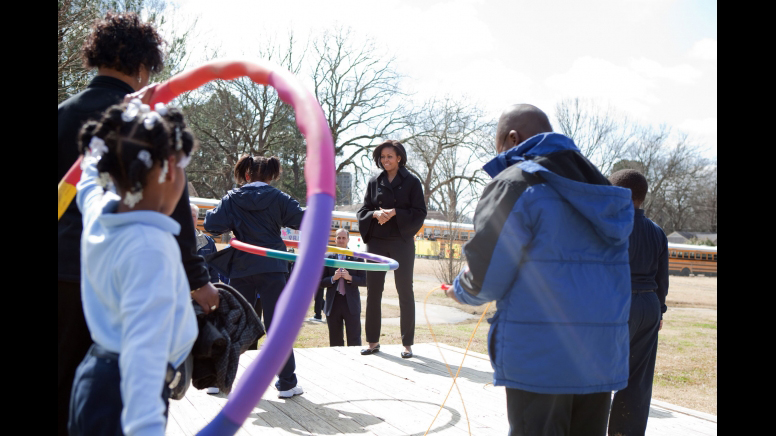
First lady calls on nation to support military families

First Lady Michelle Obama issued a national challenge to all sectors of American society to support and engage military families during the National Military Family Association's summit.